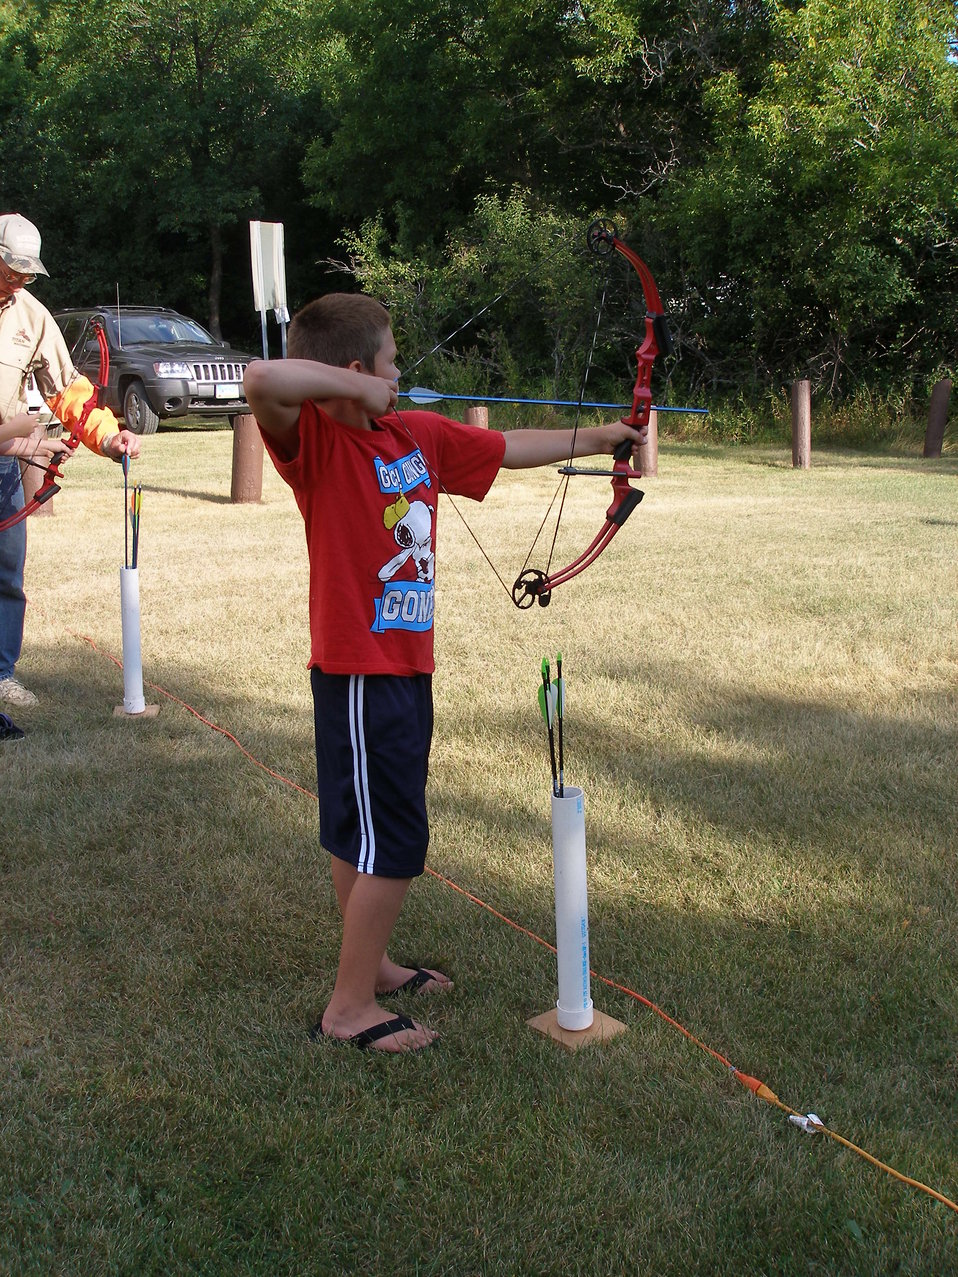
2011 Greenwing Day - Archery Session

Des Lacs National Wildlife Refuge, Tasker's Coulee

Taking Aim!